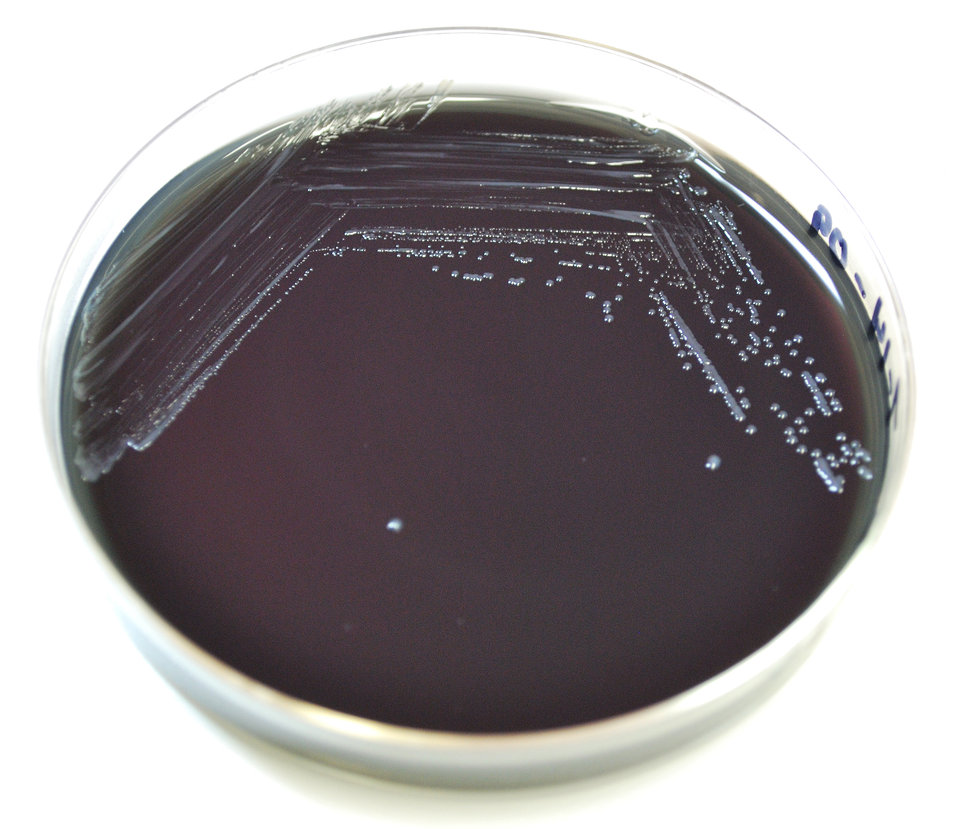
This image depicts a Petri dish containing a buffered charcoal yeast extract (BCYE) agar medium, which had been inoculated with Gram-negative Francisella tularensis live vaccine strain (LVS) bacteria. F. tularensis is the pathogen responsible for causing the disease tularemia. This was the appearance of the colonial growth after 72 hours of incubation. What is tularemia?